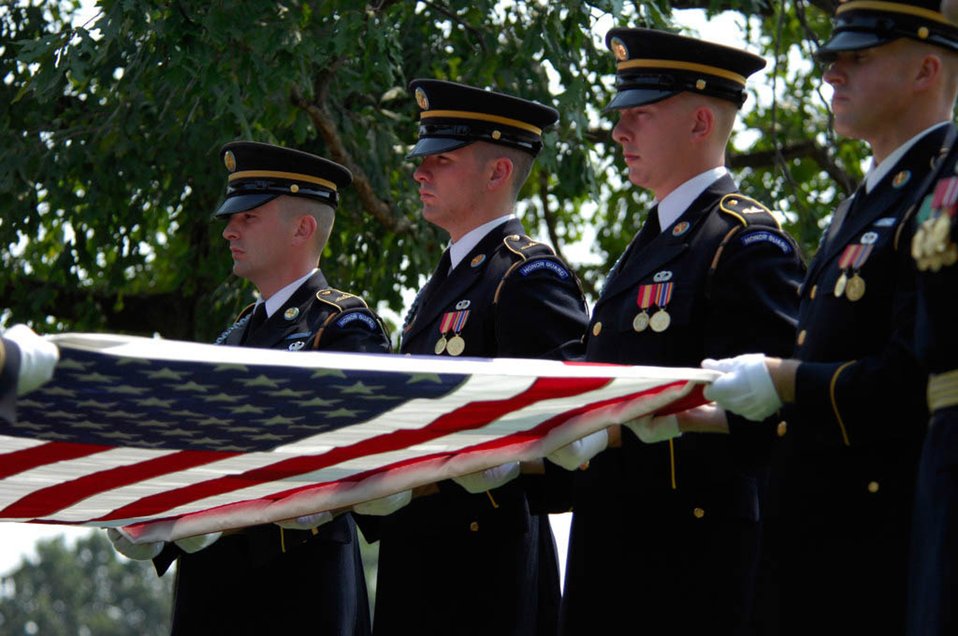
World War II B-24 pilot's remains laid to rest at Arlington

Army Color Guard members fold a flag from the casket of 2nd Lt. Harold Elton Hoskin during a burial ceremony Sept. 7 at Arlington National Cemetery in Virginia. Lieutenant Hoskin was one of five men who were flying in a B-24 Liberator that crashed while on a test flight Dec. 21, 1943, out of Ladd Field in Fairbanks, Alaska. Lieutenant Hoskin's remains were discovered in August 2006 and identified in April 2007.